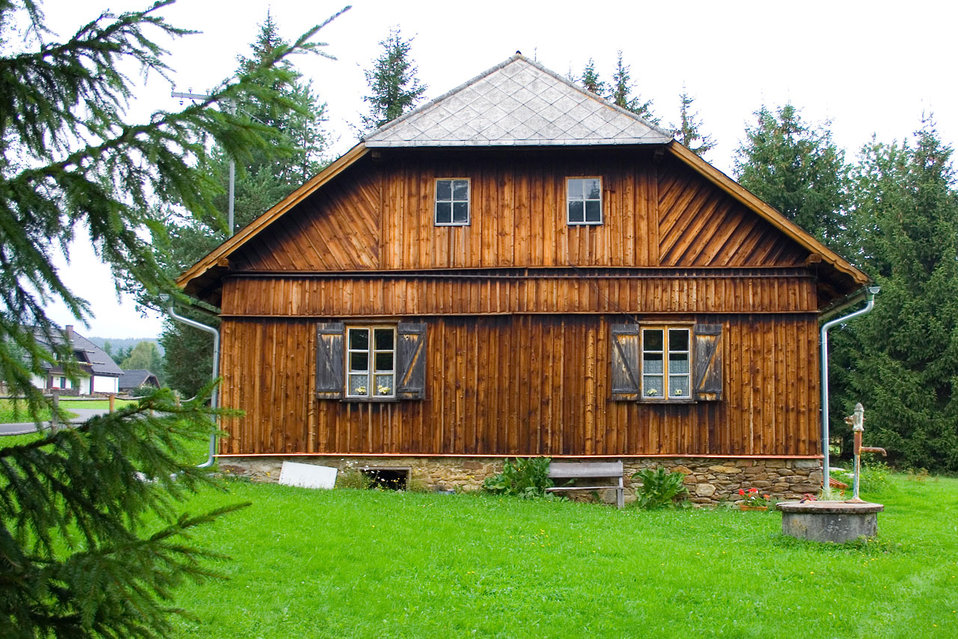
Wooden cottage in south bohemia.